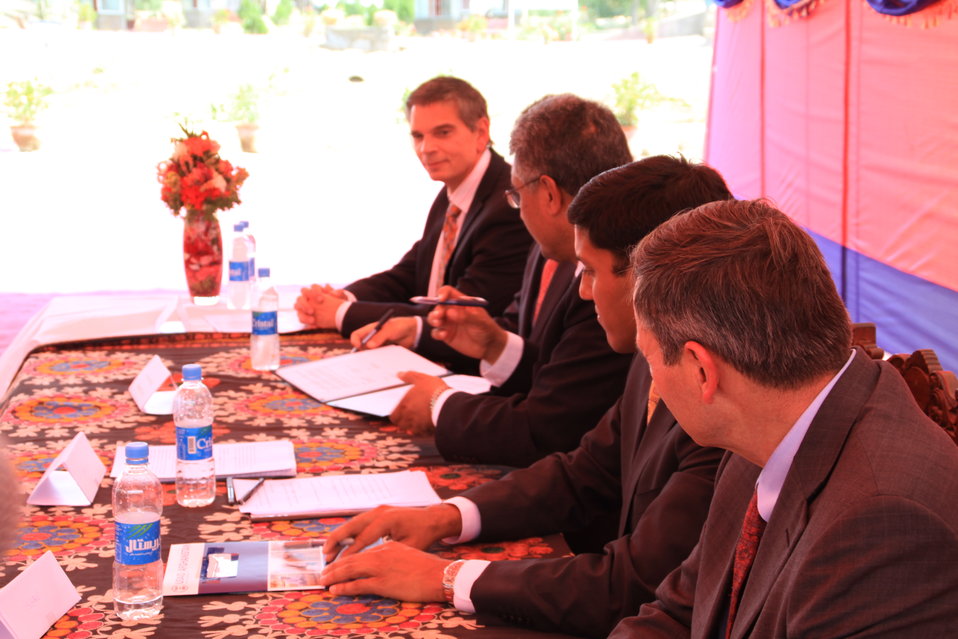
Baddam Bagh Farm